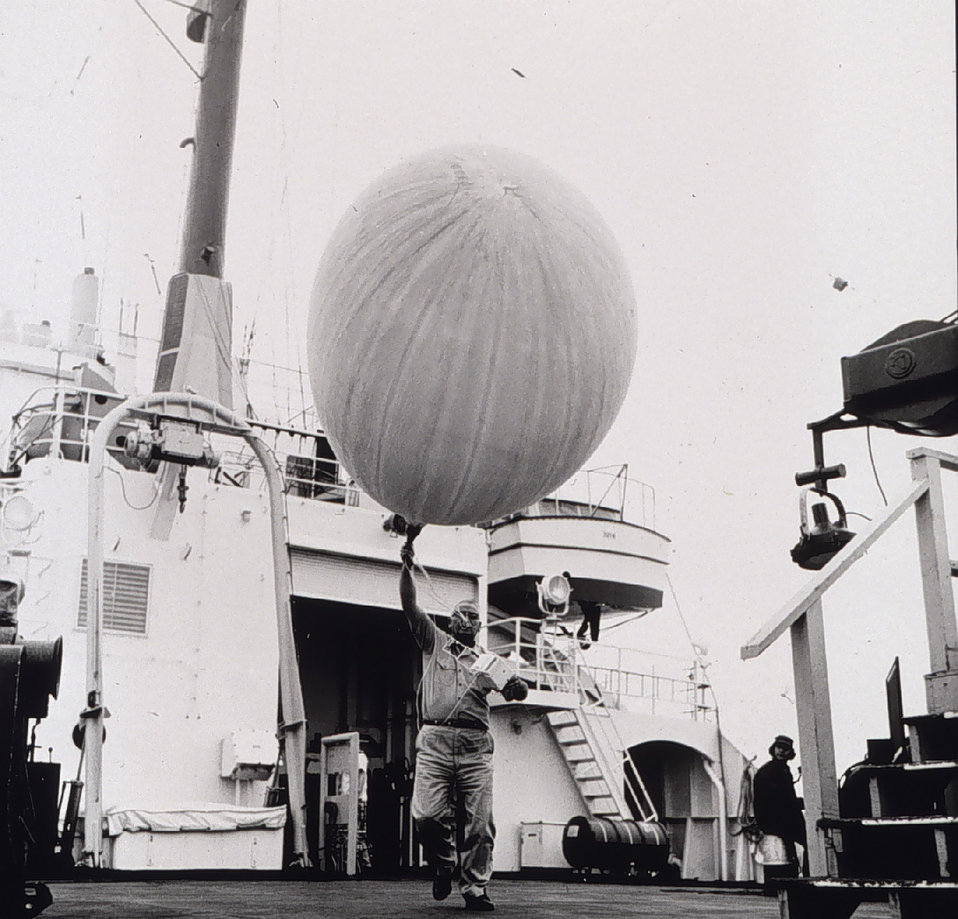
Meteorological radiosonde balloon being released. OCEANOGRAPHER around the world cruise